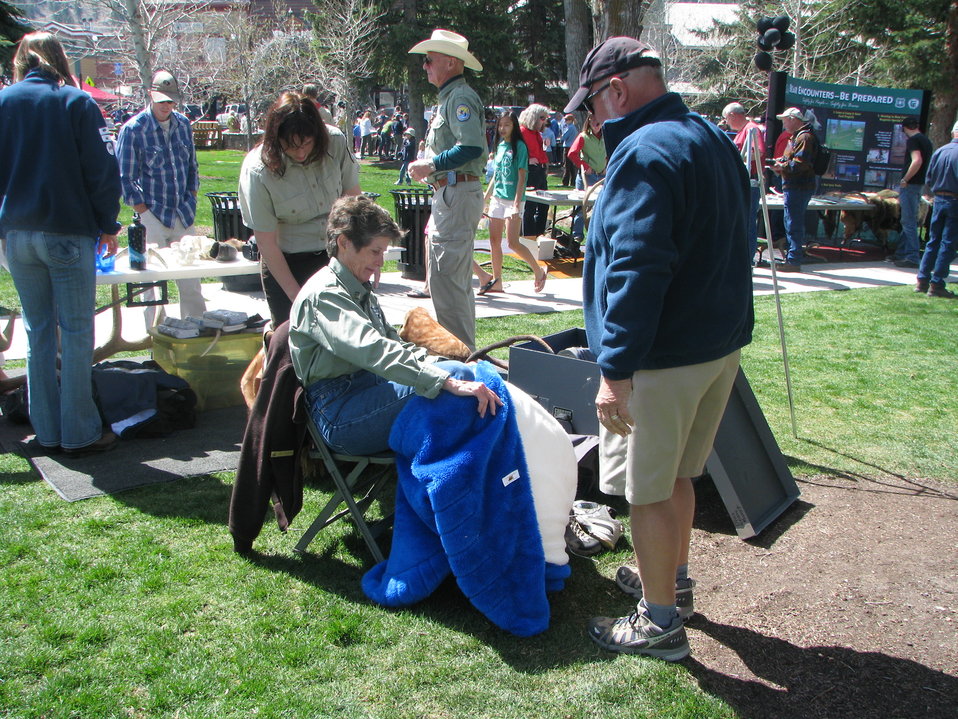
The Blue Goose Takes a Break

National Elk Refuge volunteer Kathy Eichinger takes a break from working the crowd in a Blue Goose costume at the antler auction. The Blue Goose is the symbol of the National Wildlife Refuge System.